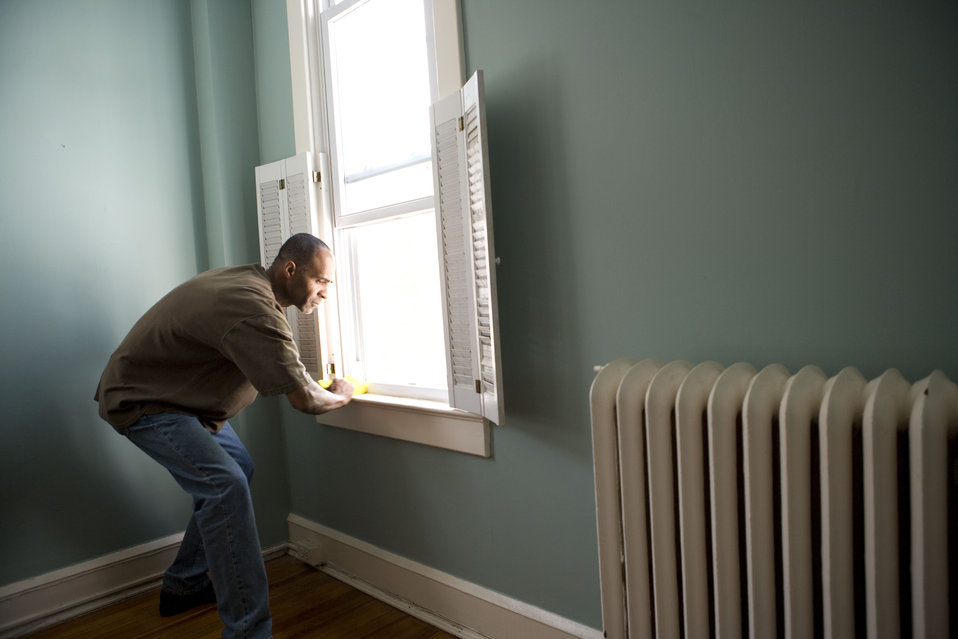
When renovating a home, you should use a damp sponge or cloth to clean dust collected on a window sill, as the dust may contain asbestos or lead-based paint. Home maintenance is an ongoing process for any homeowner, and here we see an African-American man as he was preparing a window in his home for a general cleaning.